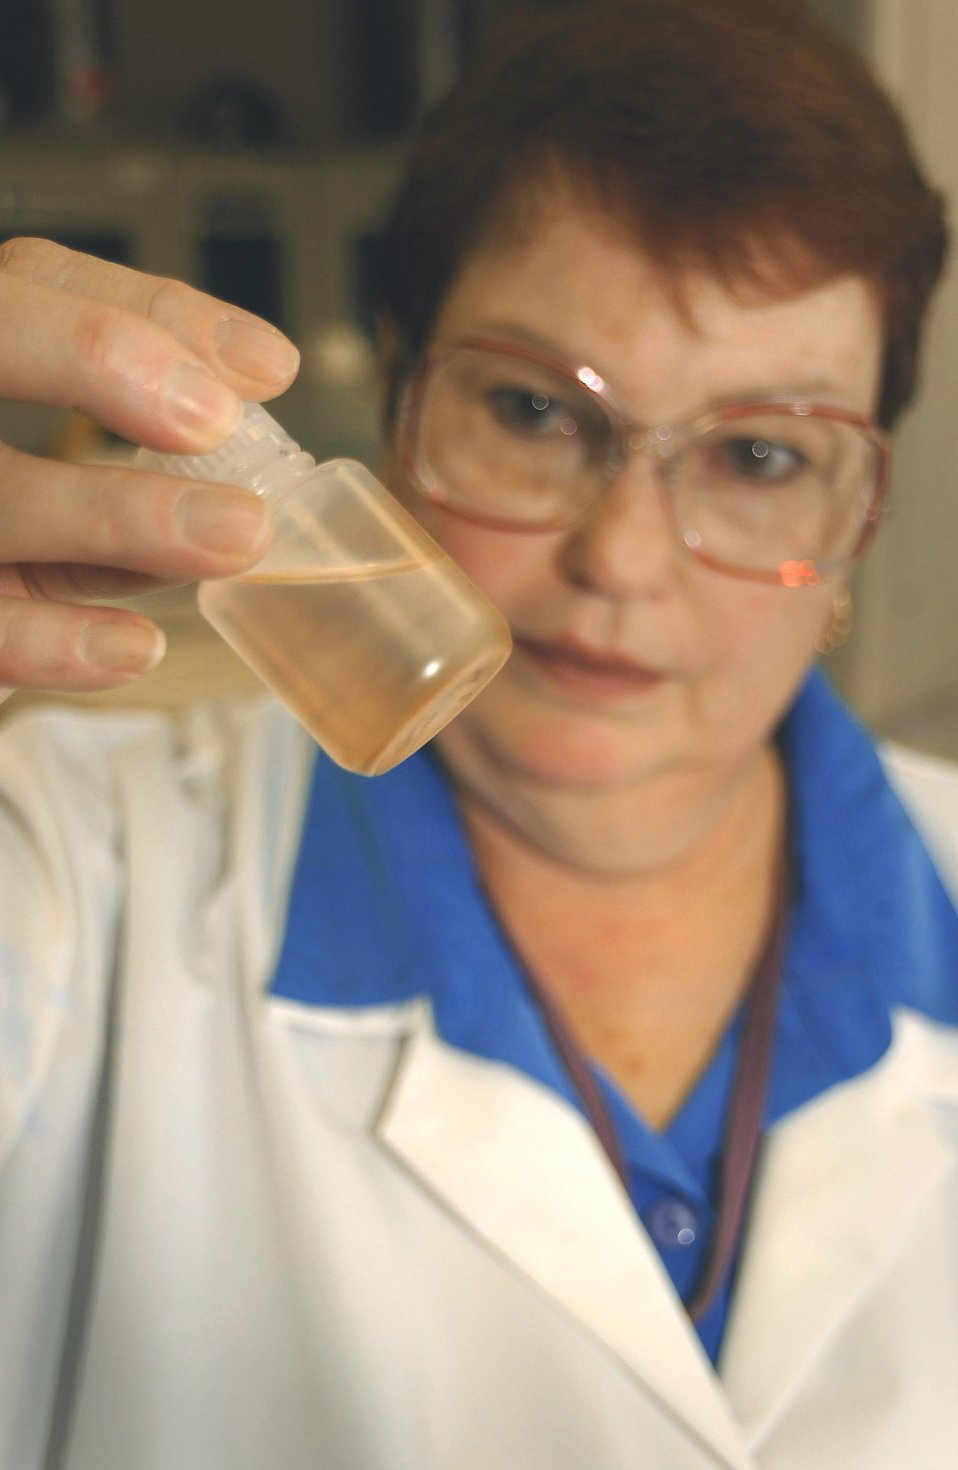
At NETL, Shelia Hedges prepares a dilution of a natural brine sample for analysis after an experiment into the interactions between carbon dioxide, water and rock.

Deep brine formulations are being investigated for storage of greenhouse gases in field and laboratory studies funded by the Department of Energy. NETL and Indiana University will be working together under provisions of a cooperative research and development agreement on to support studies being conducted under the CO2 Sequestration Regional Partnership programs. Changes in sorptive capacity of coals, CO2 reservoir interactions on saline aquifers, the solubility of CO2 brine systems are the areas that will be studied. The research will assess the impact these dynamics may have on reservoir properties, seal integrity and sequestration capacity.